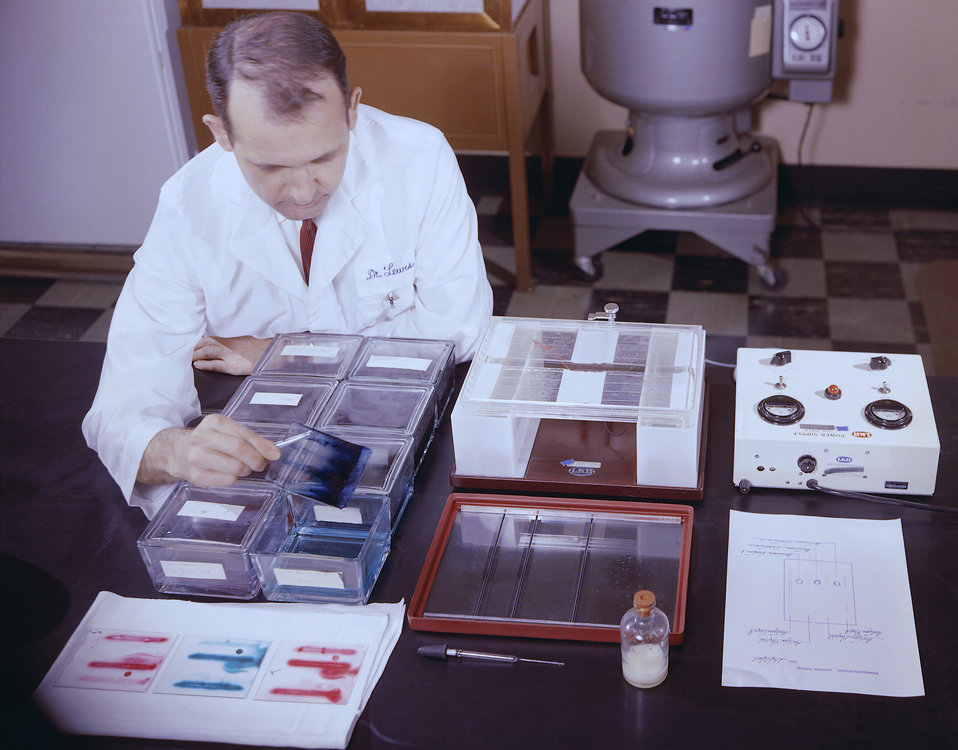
This historic 1963 photograph depicted laboratorian, Dr. V.J. Lewis, as he was seated in his lab analyzing the results produced by an immunoelectrophoresis apparatus.